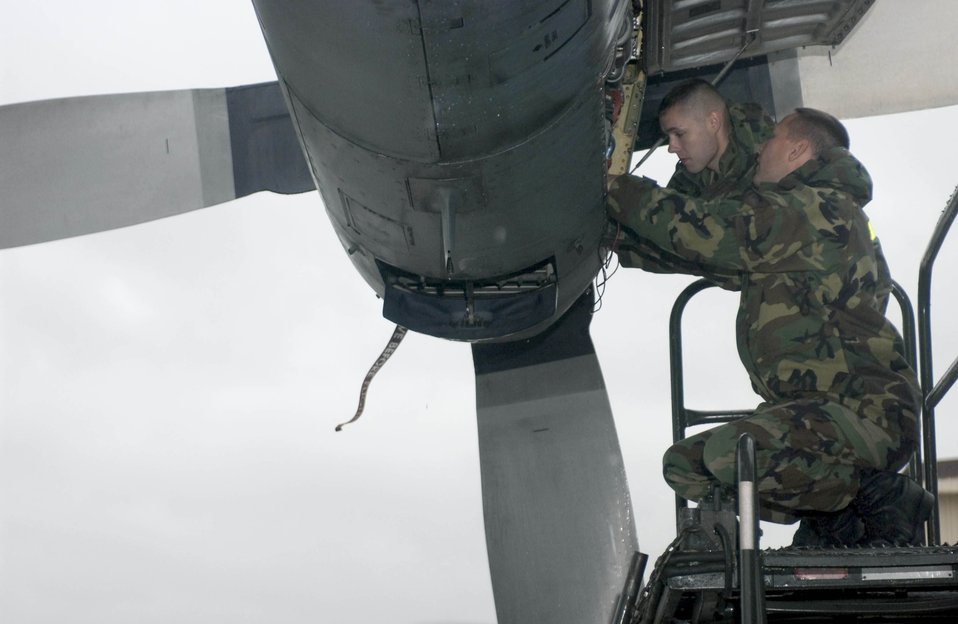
Top prop

RAMSTEIN AIR BASE, Germany -- Senior Airman Tim Stachowski (left) and Tech. Sgt. Cliff Hanson inspect a C-130 Hercules. They are turbo propulsion specialists assigned to the 38th Airlift Squadron which moves troops and supplies into the Balkan region. The Airmen are here on a temporary duty from the 934th Airlift Wing at Minneapolis-St. Paul International Airport Air Reserve Station.